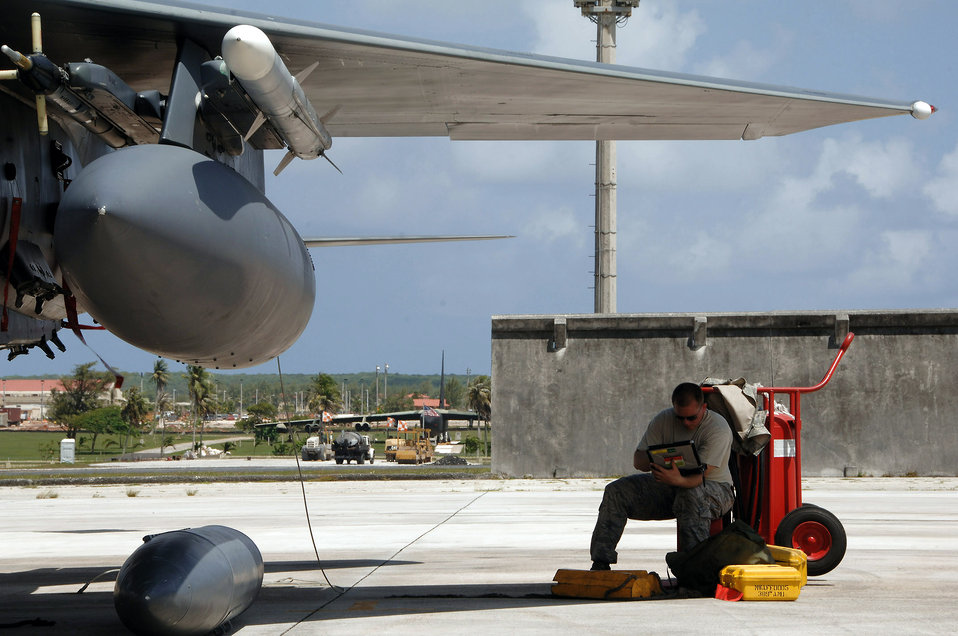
Working in the shade

A ground crew chief checks the status of an F-15E Strike Eagle June 4 at Andersen Air Force Base, Guam. Twelve Strike Eagles are deployed from Mountain Home AFB, Idaho for a four-month long tour.